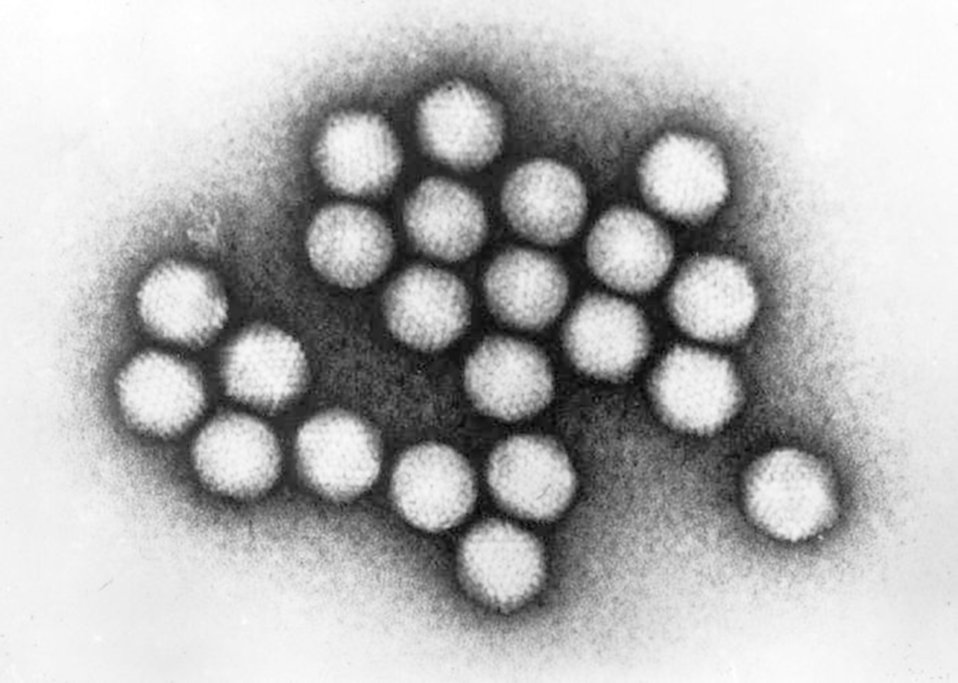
Transmission electron micrograph (TEM) of adenovirus virions.